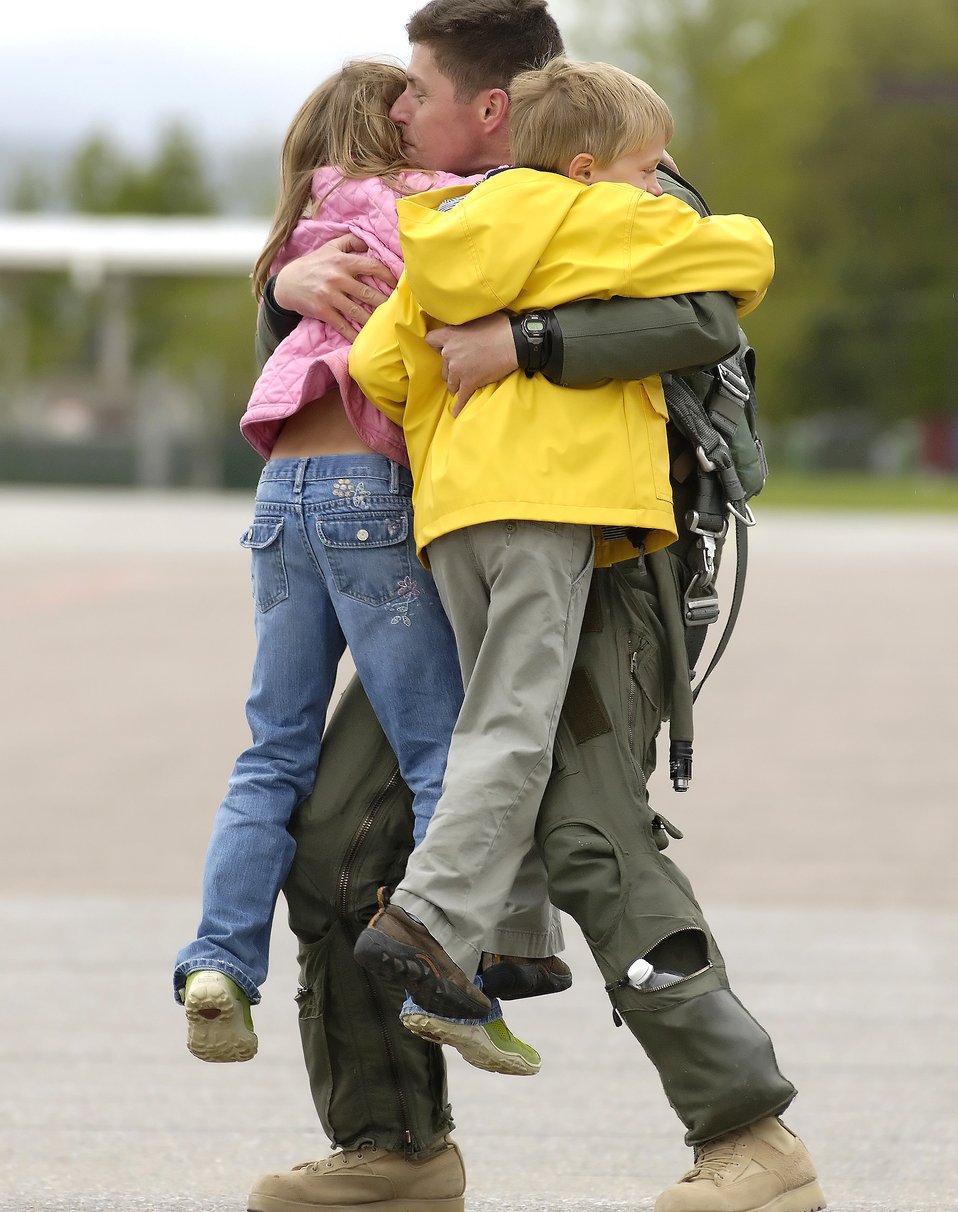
'Green Mountain Boys' come home

Lt. Col. Hank Harder hugs his 8-year-old daughter, Haley, and 6-year-old son, Henry, after returning from Iraq on Monday, May 22, 2006. Colonel Harder is an F-16 Fighting Falcon pilot with the Vermont Air National Guard's 134th Fighter Squadron. He and other